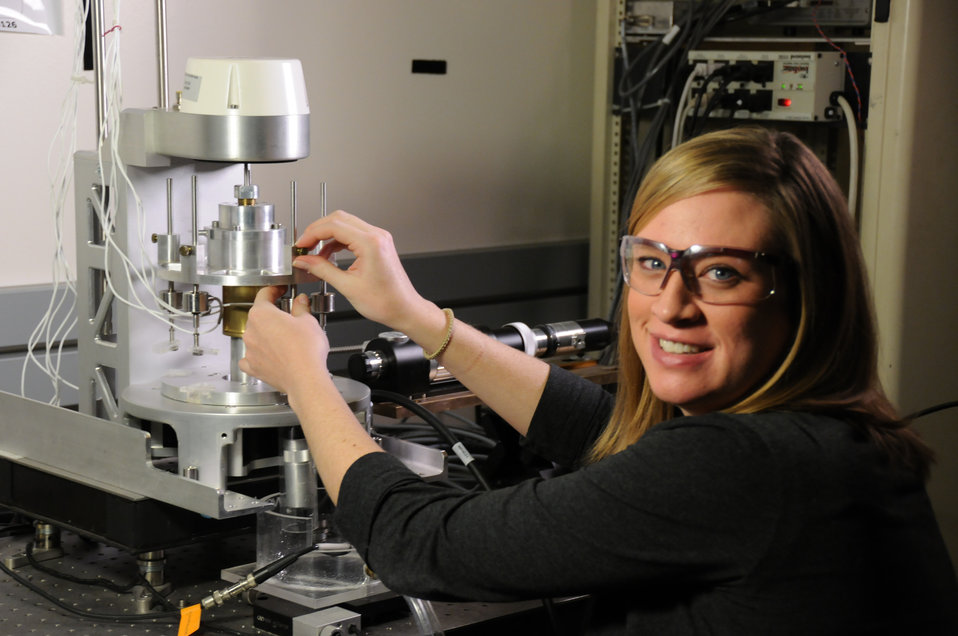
Bioreactor

Biomedical engineer Jenni Popp with NISTs prototype bioreactor for tissue engineering. The bioreactor both stimulates and evaluates engineered tissue as it grows.